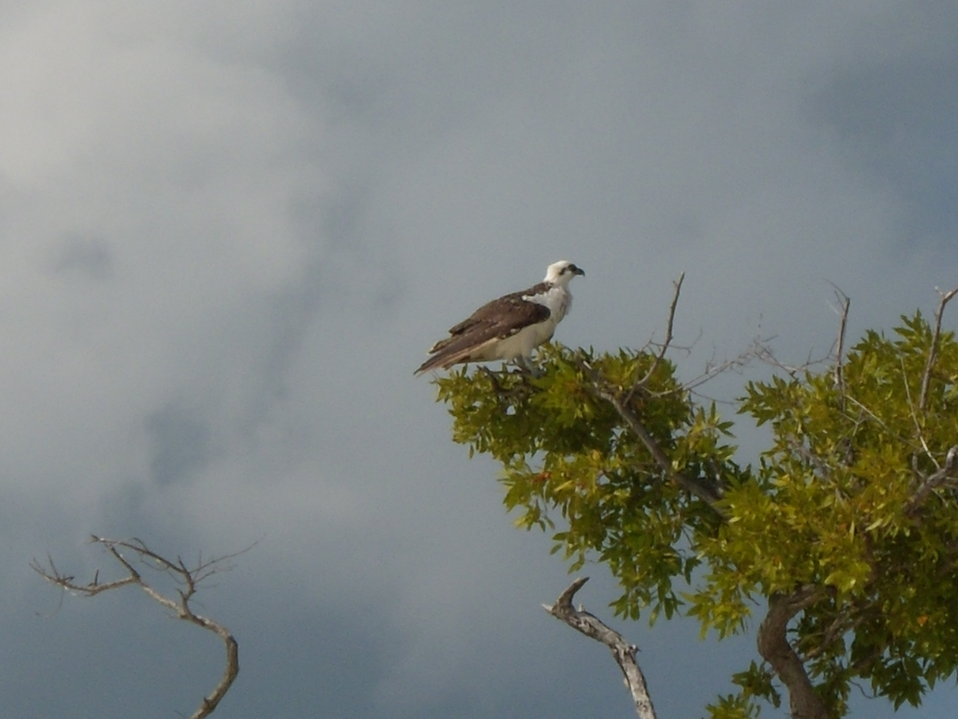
Osprey in small beachside tree

On Great Inagua Island.